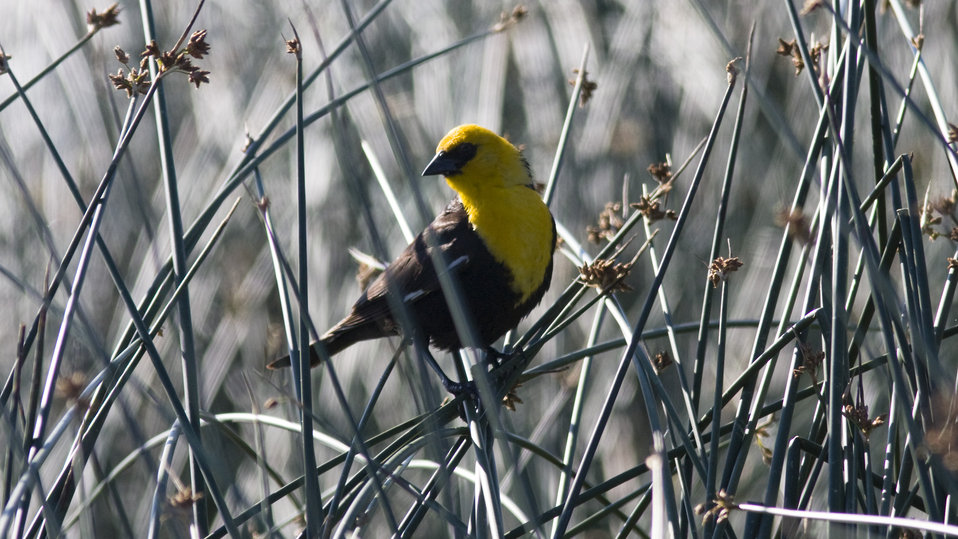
Yellow-headed BlackBird, Medicine Lake NWR

Regal Rascal - The luxurious golden hood of the yellow-headed blackbird may belie the fact that he is indeed very common in our Prarie Pothole wetlands.

Location: Medicine Lake NWR

Credit: Jamieson Scott / USFWS

Photo Contest Entry #20